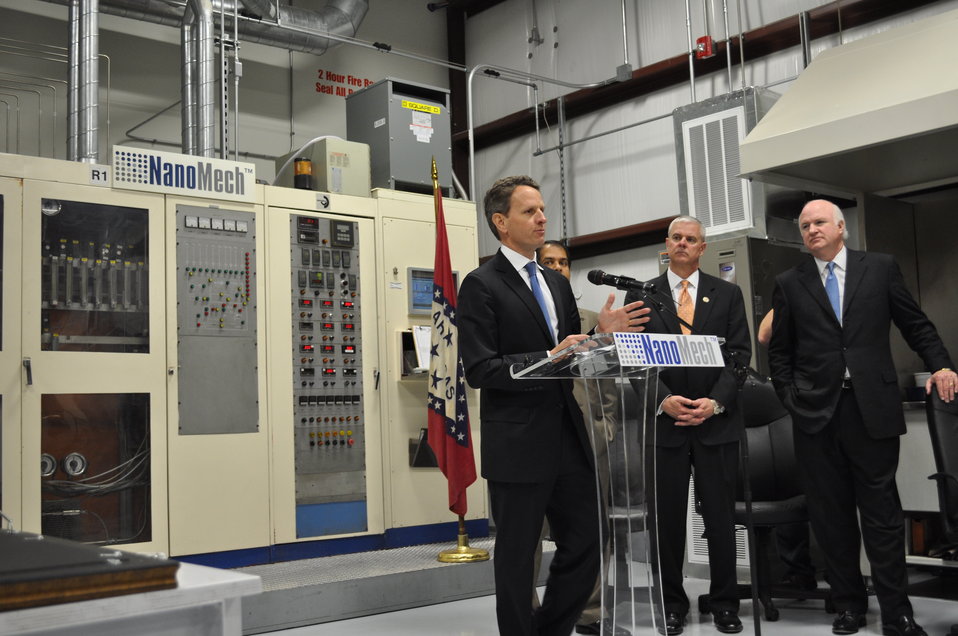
VIsit to Northwest Arkansas, 3/25/2011

After visiting the manufacturing plant and labs of NanoMech, Secretary Geithner hosted a brief media availability on the plant floor. Dr. Ajay Malshe, Founder and Chief Technology Officer of NanoMech; Congressman Steve Womack; and NanoMech CEO Jim Phillips look on.